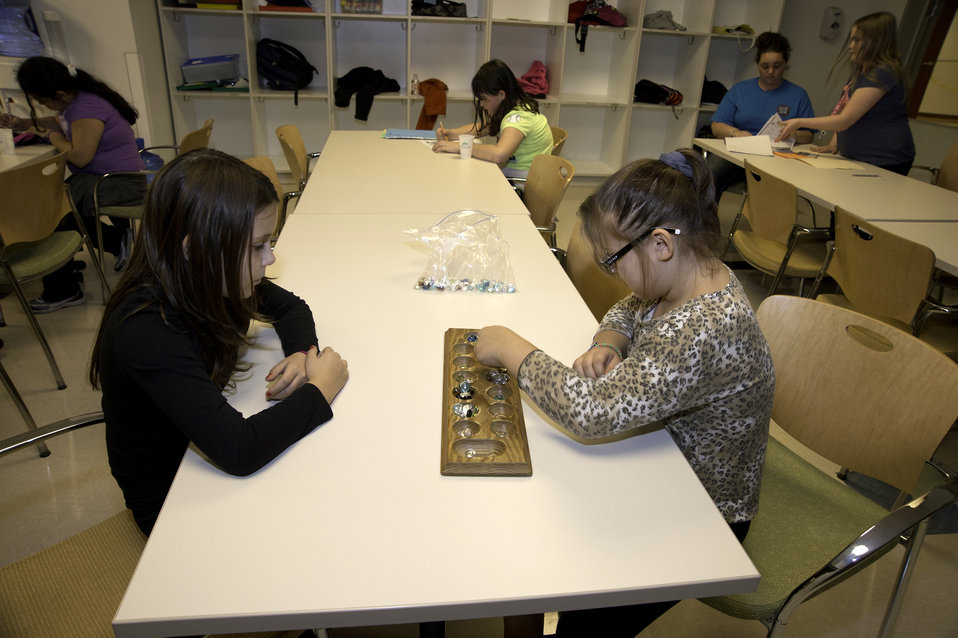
Mohegan youth enrolled in after-school programs, participate in activities at the Mohegan Tribe Community Center and Government Building in Uncasville, CT on Nov. 18, 2013. A U.S. Department of Agriculture (USDA) Rural Development (RD) Community Facility Loan was provided to the Mohegan Tribe for the construction of the Mohegan Tribe Community Center and Government Building in Uncasville, CT. USDA’s RD Community Facilities Programs makes and guarantees loans to develop essential community facilities in rural areas and towns of up to 20,000 in population. Loans and guarantees are available to public entities such as municipalities, counties, parishes, boroughs, and special-purpose districts, as well as to non-profit corporations and tribal governments. The 160,000 square foot building Center hosts an exhibit celebrating federal recognition, history of Mohegan Chiefs, a new Library and Archives space, new Arts and Crafts room, a new gymnasium, and a new community room to enjoy food and family. The Center will continue the Tribe’s plan for growth and meeting the needs of its members.